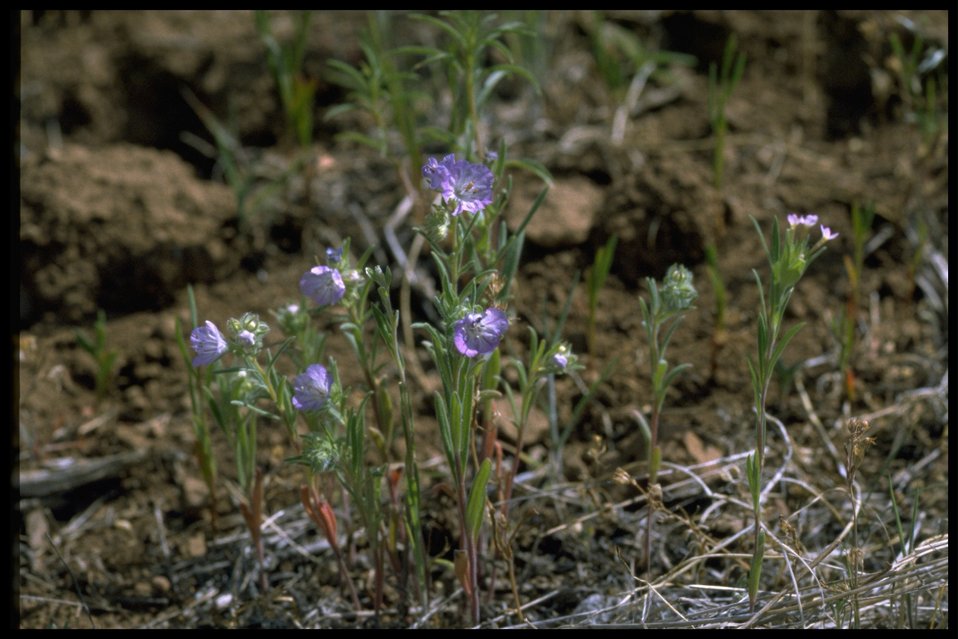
Farshot of Linear-leaf Phacelia wildflowers.